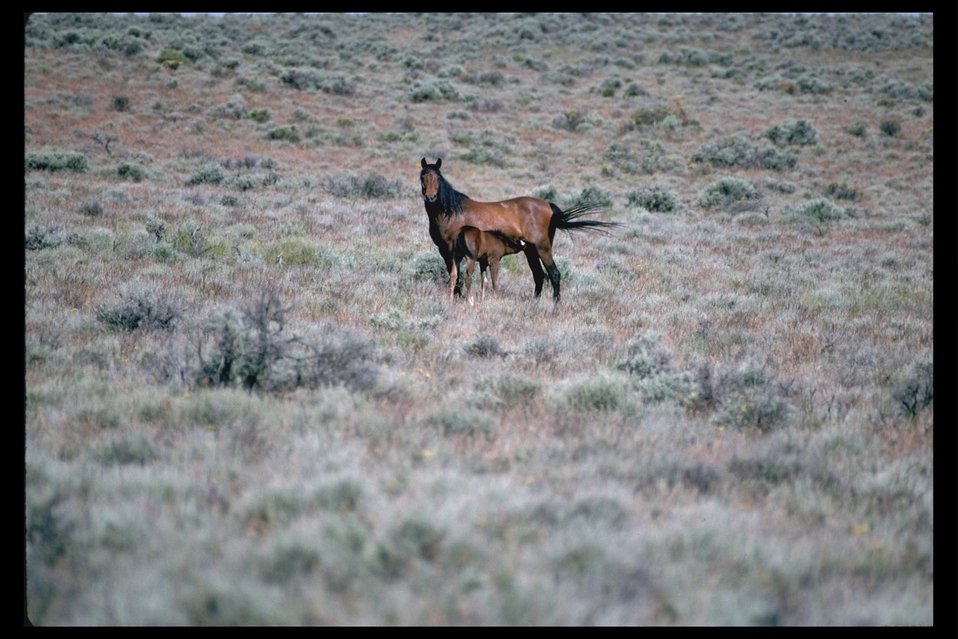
Wild horses in West Warm Springs HMA.